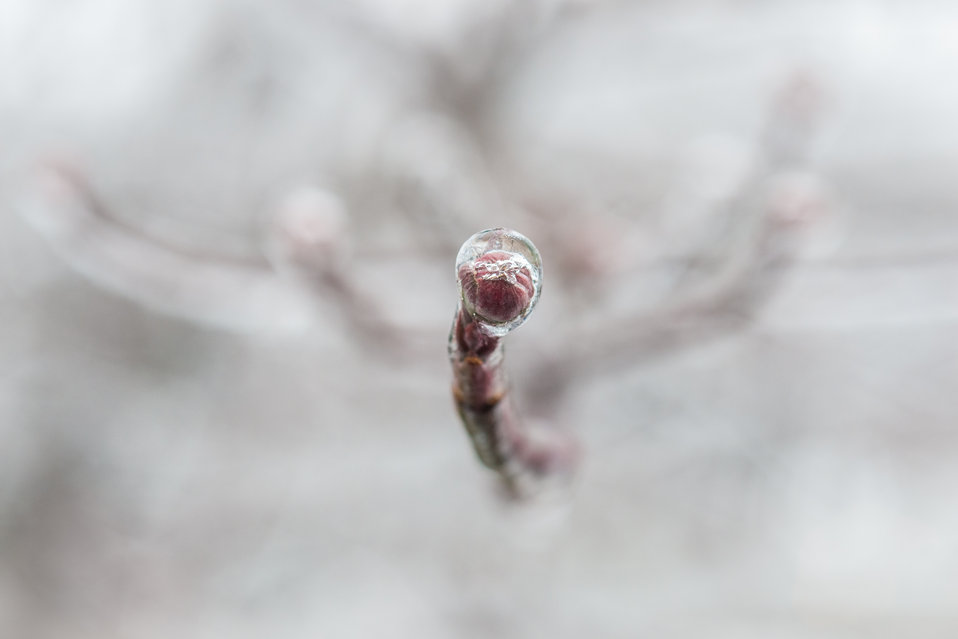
Freezing rain covers plants and trees in Falls Church, VA on Monday, Dec. 9, 2013.